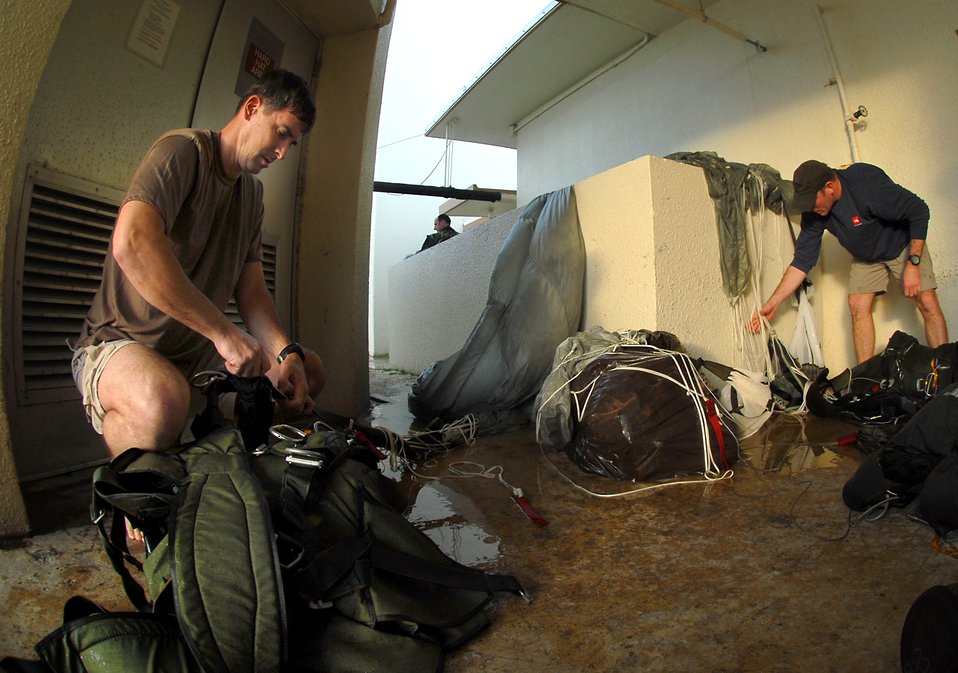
Combat Rescue

Master Sergeant Rich Carroll and Senior Airman Chris Harding from the 31st Rescue Squadron, Kadena Air Base, Japan, rinse off the salt water from parachutes and clean up gear after participating in a weekly training exercise Jan. 16.